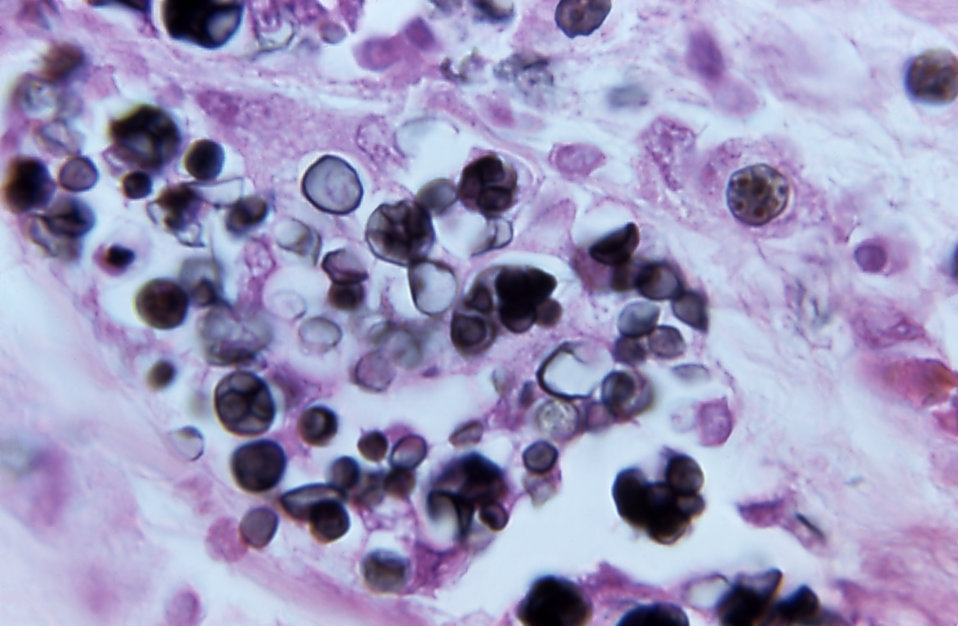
Using a Gomori staining technique, this photomicrograph magnified 1400X, depicted the mucocutaneous disease, 'protothecosis'. The specimen consisted of a tissue sample that included portions of skin and mucous membrane of a patient's nasal cavity acquired in a clinical setting.